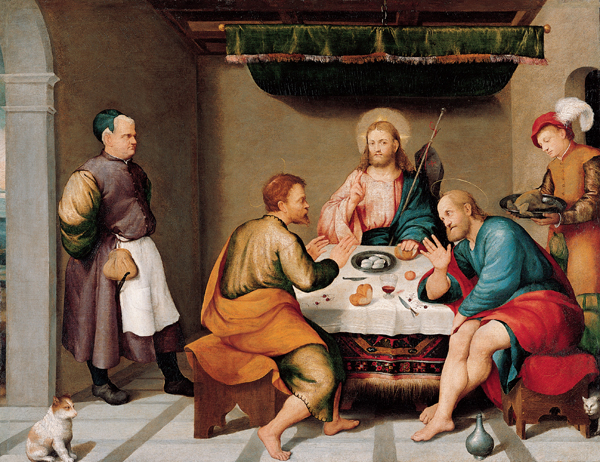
'The Supper at Emmaus', oil on canvas painting by Jacopo Bassano (Jacopo dal Ponte)